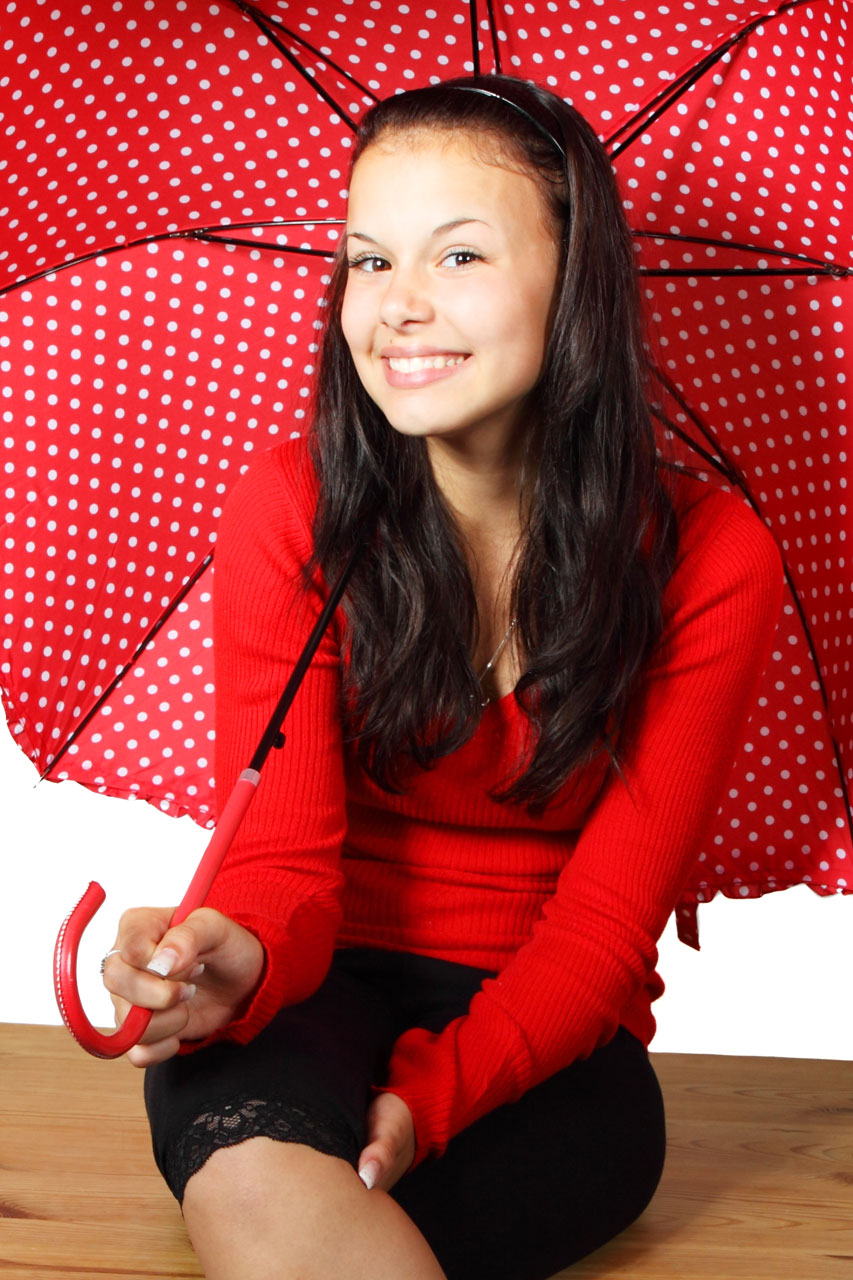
Young woman with red umbrella

Young woman with red dotted umbrella sitting.